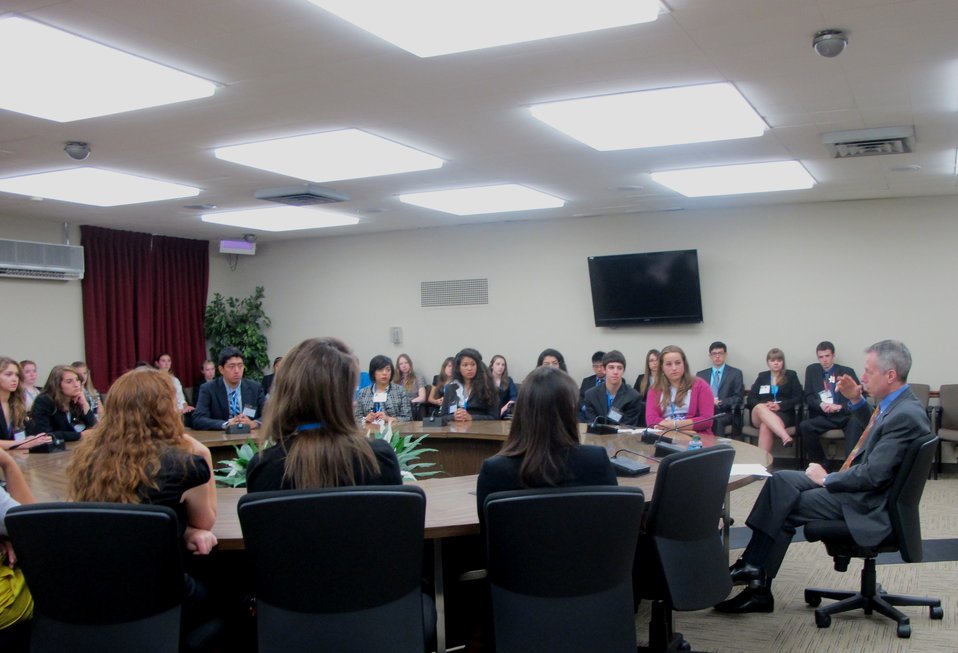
Deputy Assistant Secretary Ratney Addresses Students From the National Student Leadership Conference

Public Affairs Deputy Assistant Secretary (DAS) for International Media Michael Ratney speaks to a group of over 50 students from the National Student Leadership Conference visiting the Harry S. Truman building on July 5, 2011. DAS Ratney briefed the students with an overview of the U.S. Department of State and U.S. foreign policy priorities.